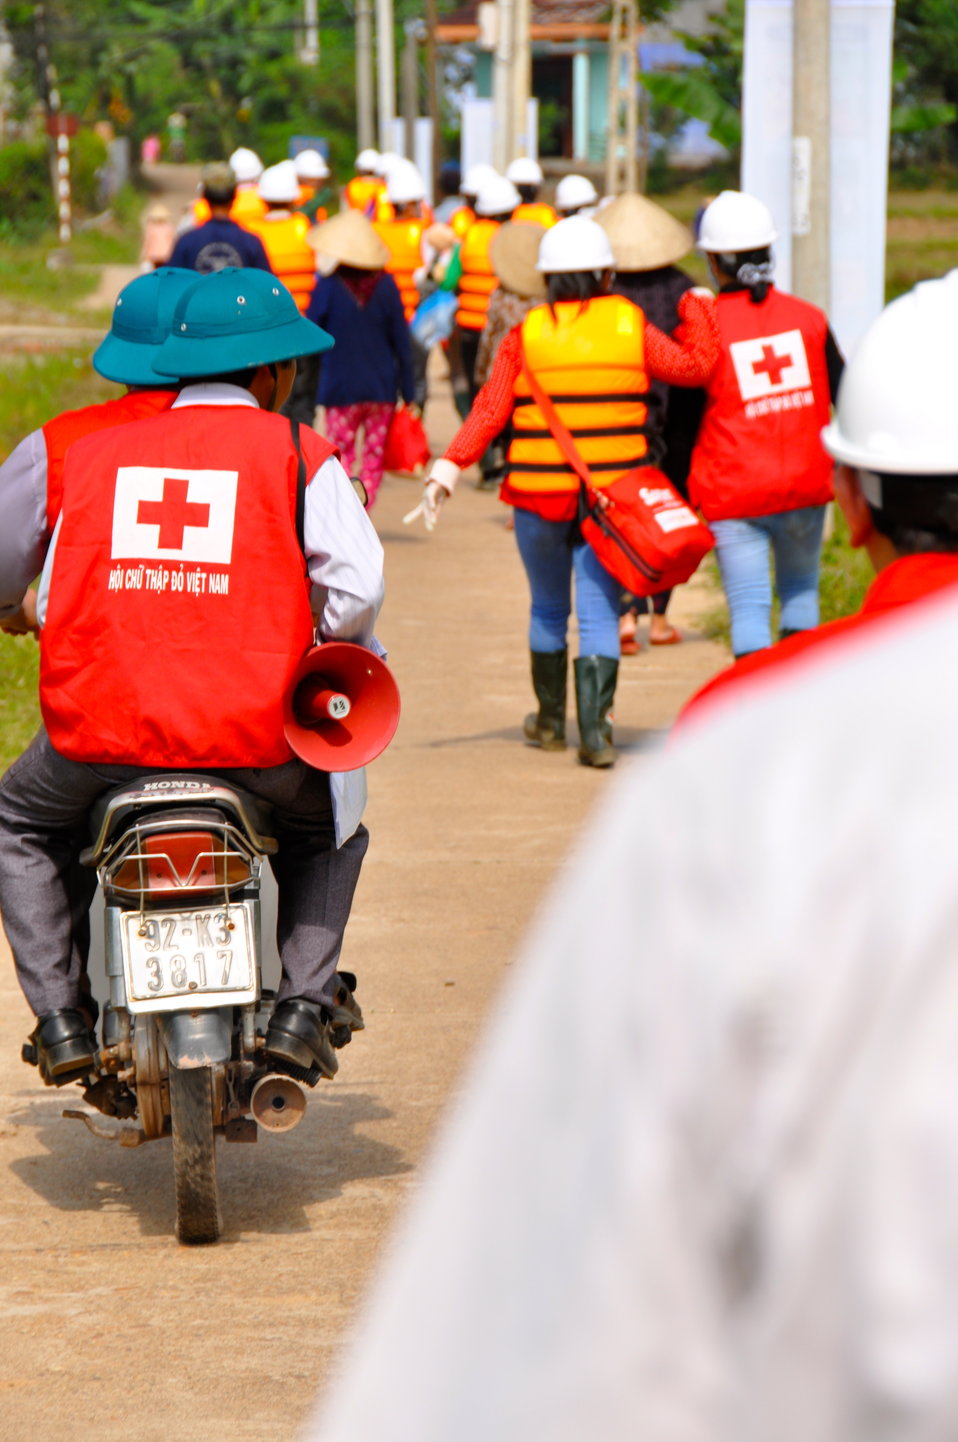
USAID, Red Cross Support Disaster Response Drill in Duy Hoa Commune, Quang Nam Province

Duy Hoa Commune, Quang Nam Province
December 5, 2012